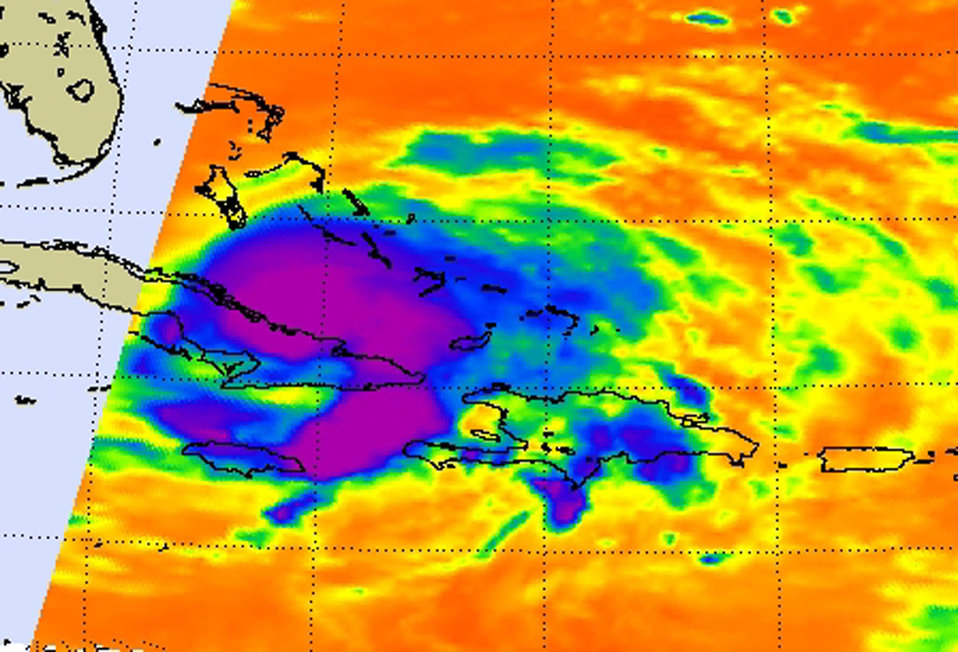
Sept. 8, 2008, first updateHurricane Ike Pounding Cuba Today